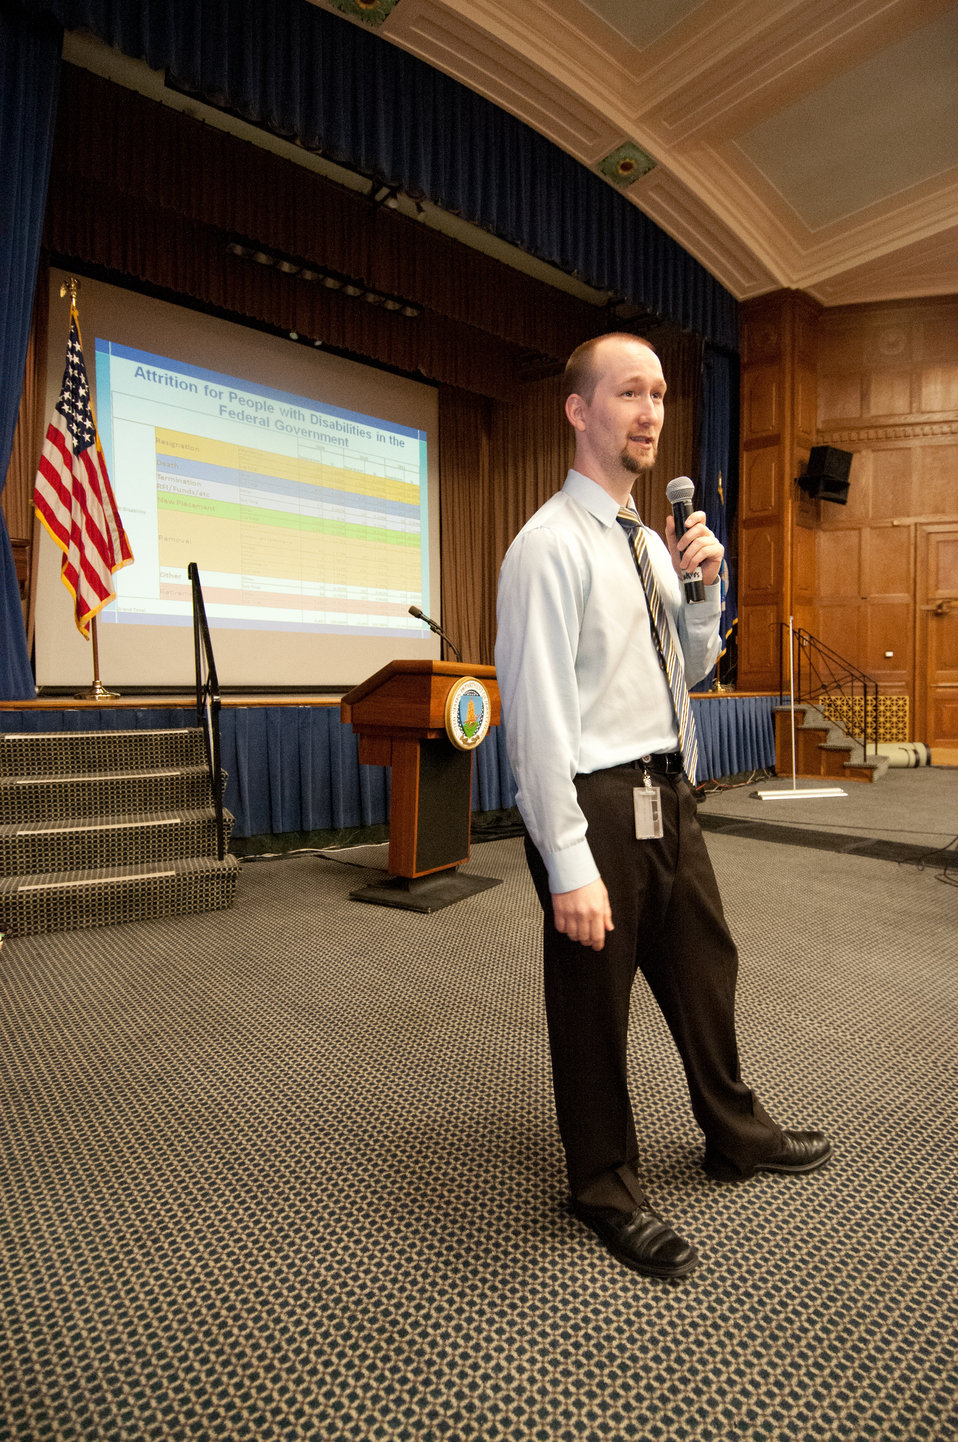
Office of Personnel Management (OPM) Diversity and Inclusion Program Manager Michael Murray discusses diversity and inclusion at the U.S. Department of Agriculture (USDA) Office of Human Resources Management (OHRM) Disability Employment Program Team Training at USDA in Washington, D.C. on Tuesday, May 14, 2013.